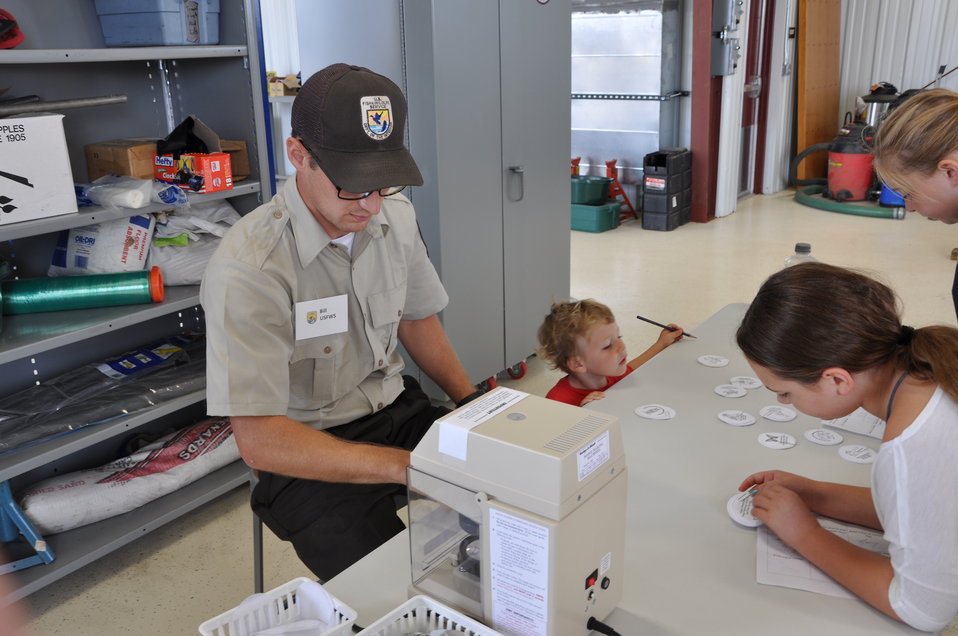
Family activities at La Crosse visitor center